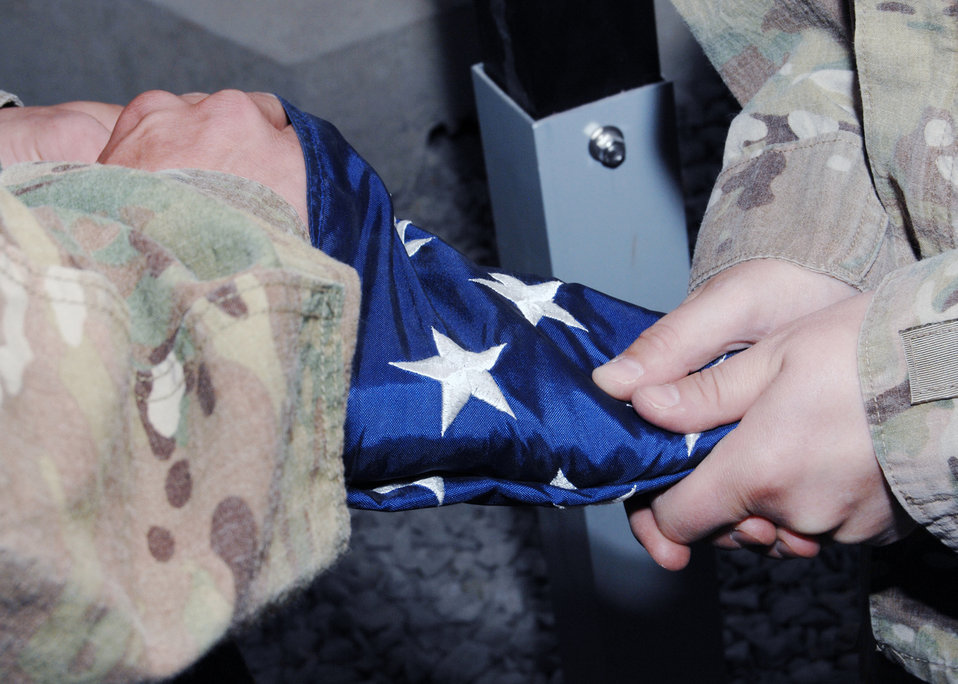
Raising the Flag

Airmen from the 651st Expeditionary Aeromedical Evacuation Squadron put the finishing touches on folding the U.S. flag during a retreat ceremony at Kandahar Airfield, Afghanistan, Aug. 4, 2012.